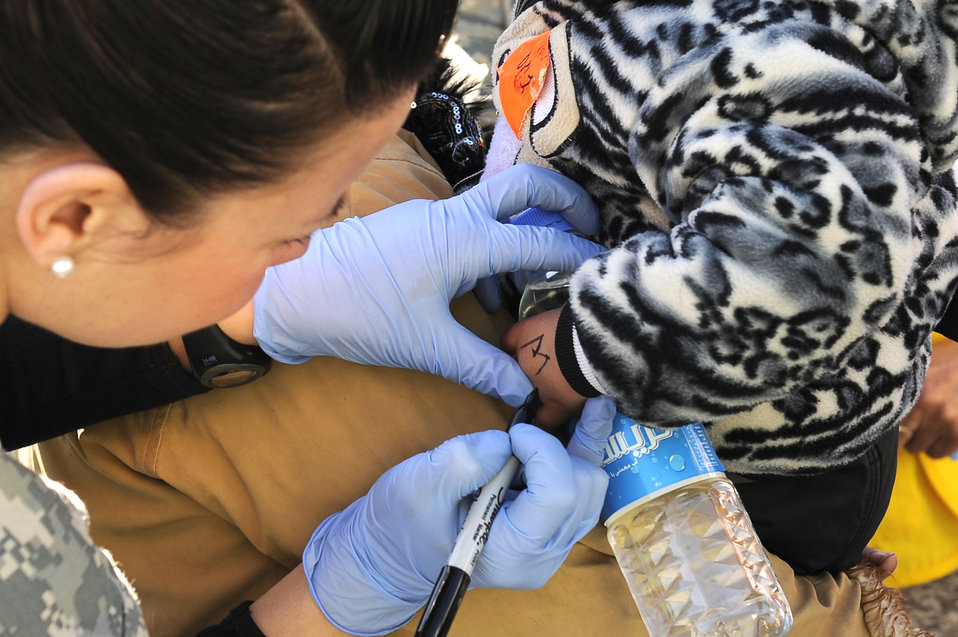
Afghan avalanches

Master Sgt. Jan Fink assesses an avalanche survivor's wrist Feb. 9, 2010, at Craig Joint Theater Hospital at Bagram Airfield, Afghanistan. Dozens of Afghans were taken to Bagram Airfield after avalanches struck a mountain pass in the Parwan Province. Sergeant Fink is assigned to the 455th Expeditionary Medical Group.